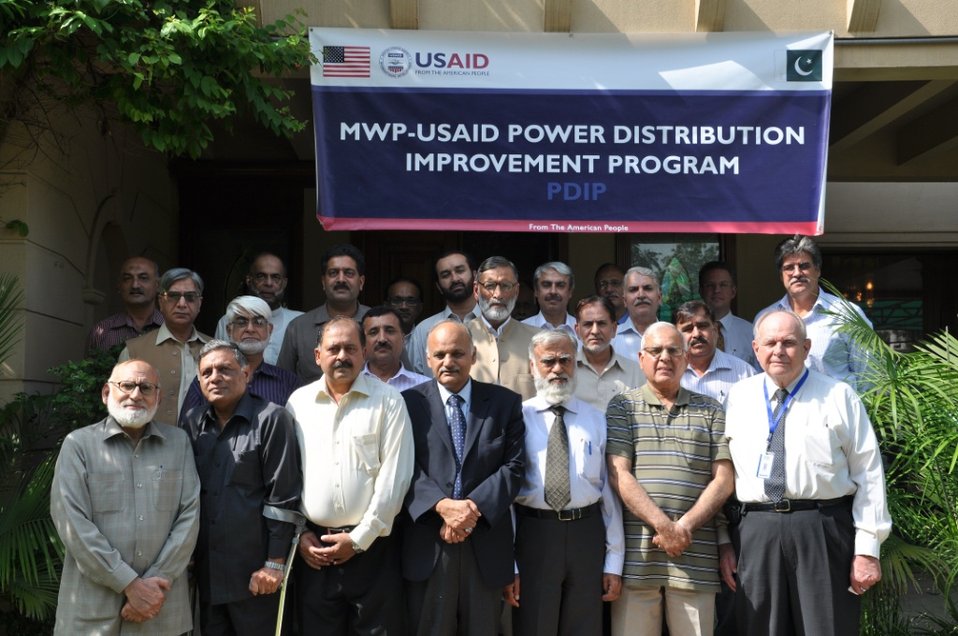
22 Sept, 2011 Engineering Workshop - Discussion on Engineering Strategies with DISCOs' Chief Engineers and NTDC

USAID's Power Distribution Improvement Program held a consultation workshop on September 22nd with the DISCO Chief Engineers and representatives from National Transmission and Dispatch Company (NTDC) to review and discuss new line materials to be introduced on the performance improvement projects, a strategy for developing an automatic metering infrastructure (AMI), and improvements needed to the current design and construction standards. At this meeting it was agreed to form a Standards Committee whose members would include representatives from each DISCO and NTDC along with PDP as an advisor.